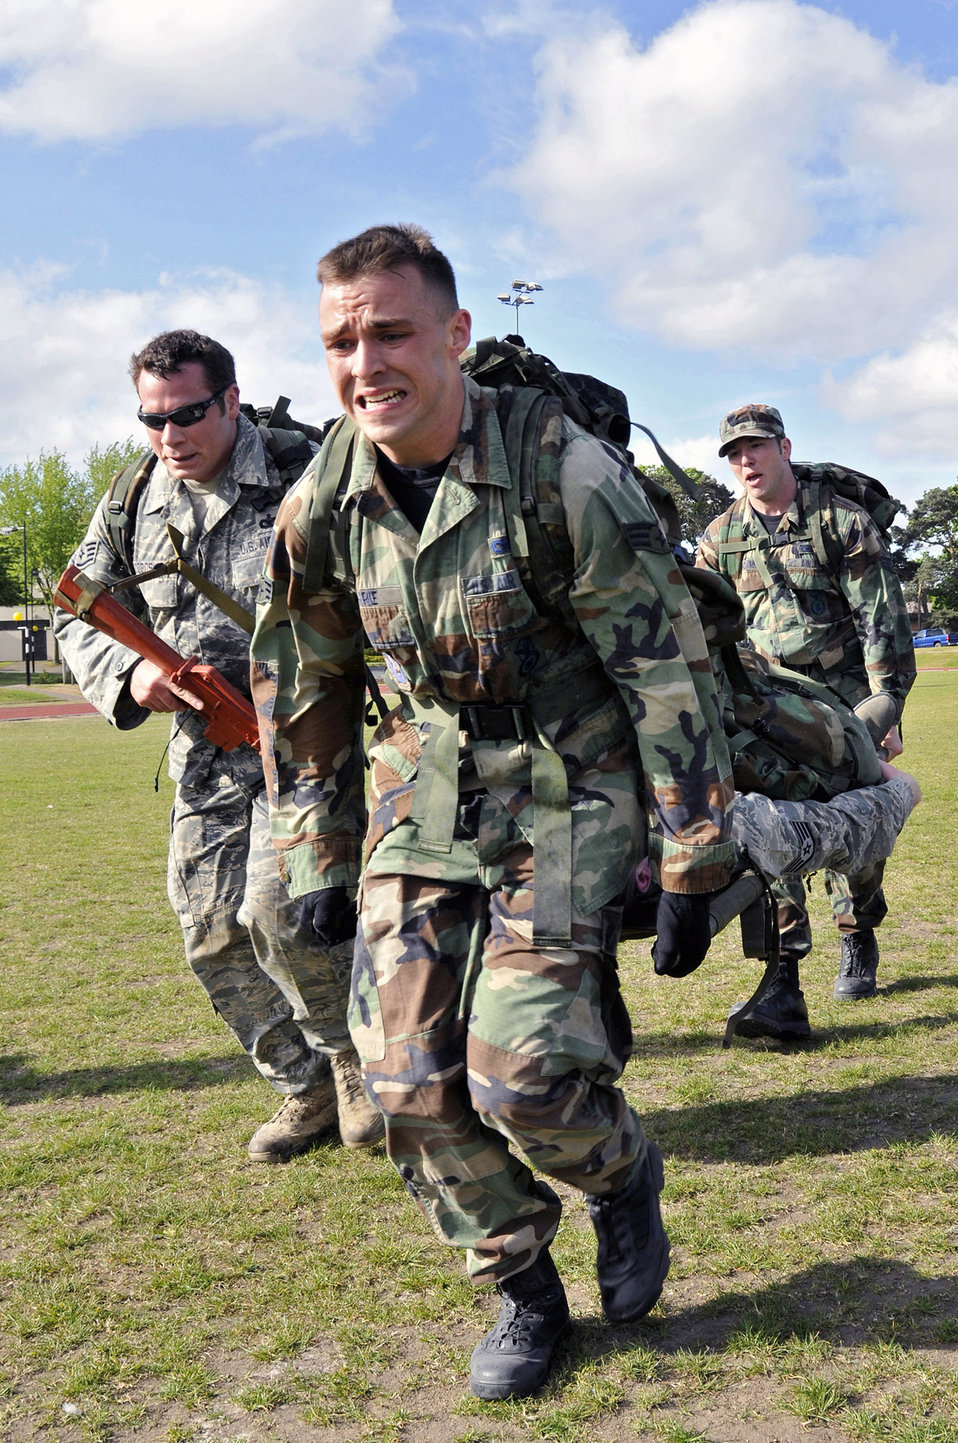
Near the finish line...

Airmen from the 100th Security Forces Squadron at Royal Air Force Mildenhall, England, carry a litter during the 5K ruck march May 11 at RAF Lakenheath. The litter carry was the last of the tasks during the march held for National Police Week.